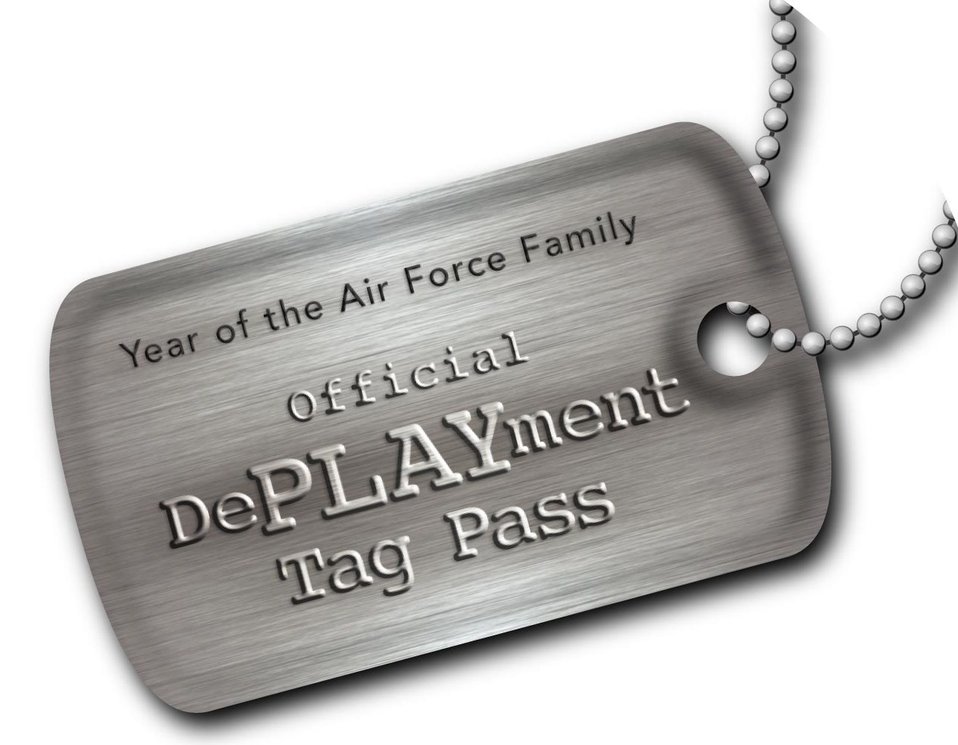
DePLAYment tags coming soon

Air Force Services Agency officials will be offering DePLAYment tags to families of deployed members starting Dec. 21 through July 31, 2010, as part of the Year of the Air Force Family. Once registered, the tag-pass holder can use the tags to qualify for free and reduced fee programs, such as free youth classes, instructional classes, sports programs, hourly childcare, and family programs for the family left at home during deployment or upon return of the member.